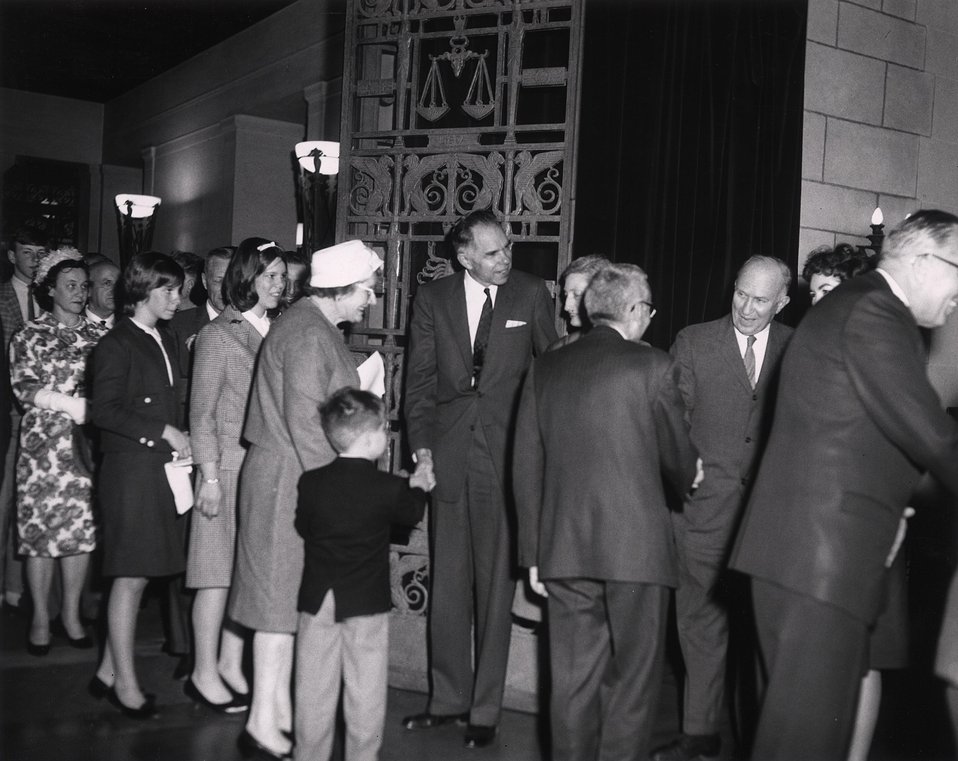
E. O . Lawrence Award Ceremony. National Academy of Sciences. April 29, 1965. Receiving Line.